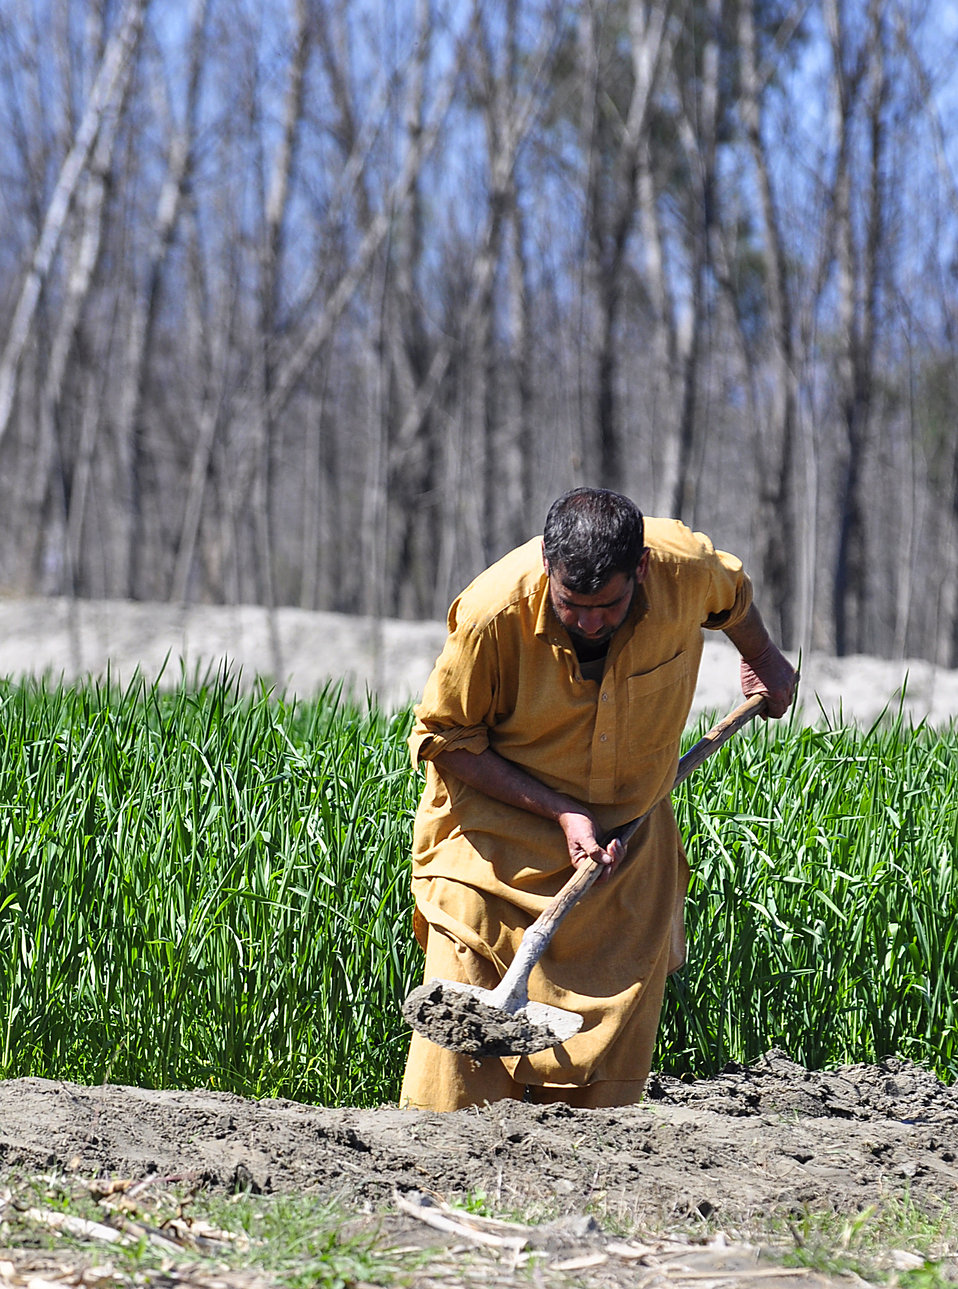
2011 March: USAID's Agricultural Recovery Program in 22 districts of Khyber Pakhtunkhwa, Punjab and Balochistan is an excellent example of the impact US development assistance can have. We have helped more than 500,000 farmers salvage the winter planting season and livestock after the floods. As a result, wheat farmers have nearly doubled their harvests. More than 5 million people have benefited. These photos show progress of the USAID Agricultural Recovery Project in Khyber Pakhtunkhwa.